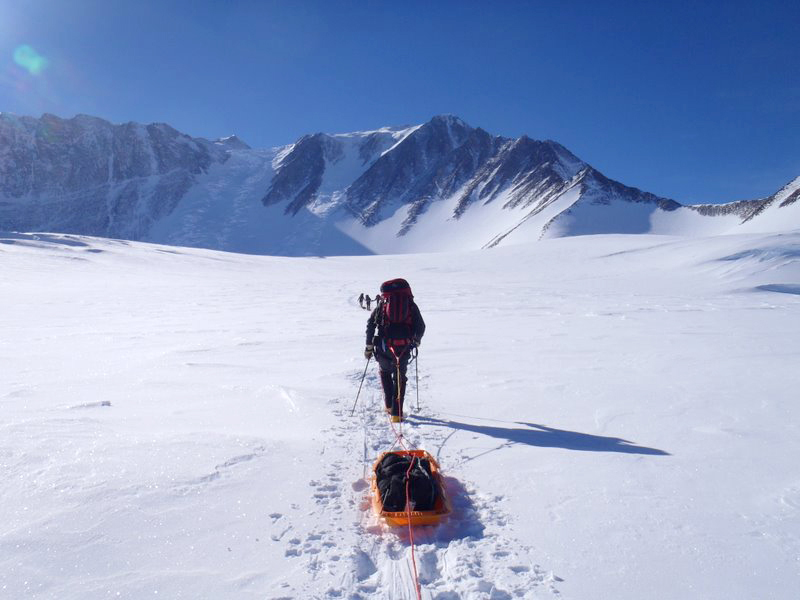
Standing Atop the Bottom of the Earth

The U.S. Air Force Seven Summits team makes its way up to Mount Vinson's 16,077-foot summit. The team arrived at Antarctica's highest peak Dec. 9, 2010.